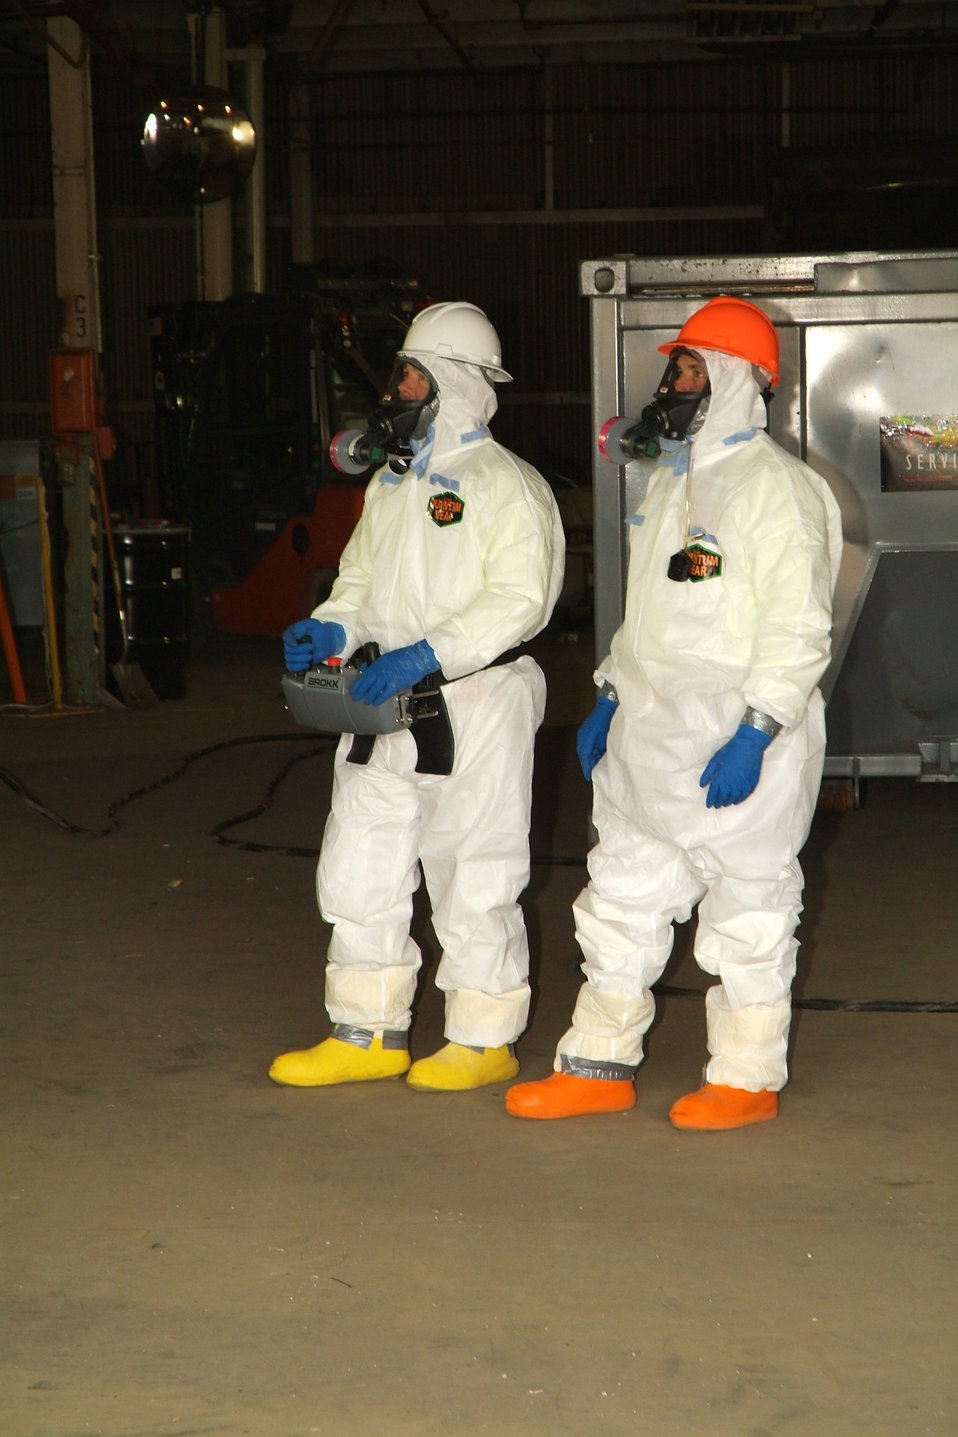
Recovery Act Workers Use Robotics at Paducah Site Cleanup

Recovery Act workers are using robotic equipment for the first time at the Paducah Site to clean up old buildings safely and efficiently.

A remote-controlled machine is removing contaminated piping and other systems from the “B” building, one of five structures comprising the C-340 Metals Plant. It is one of three contaminated Cold War complexes being cleaned up with nearly $80 million in Recovery Act funding.